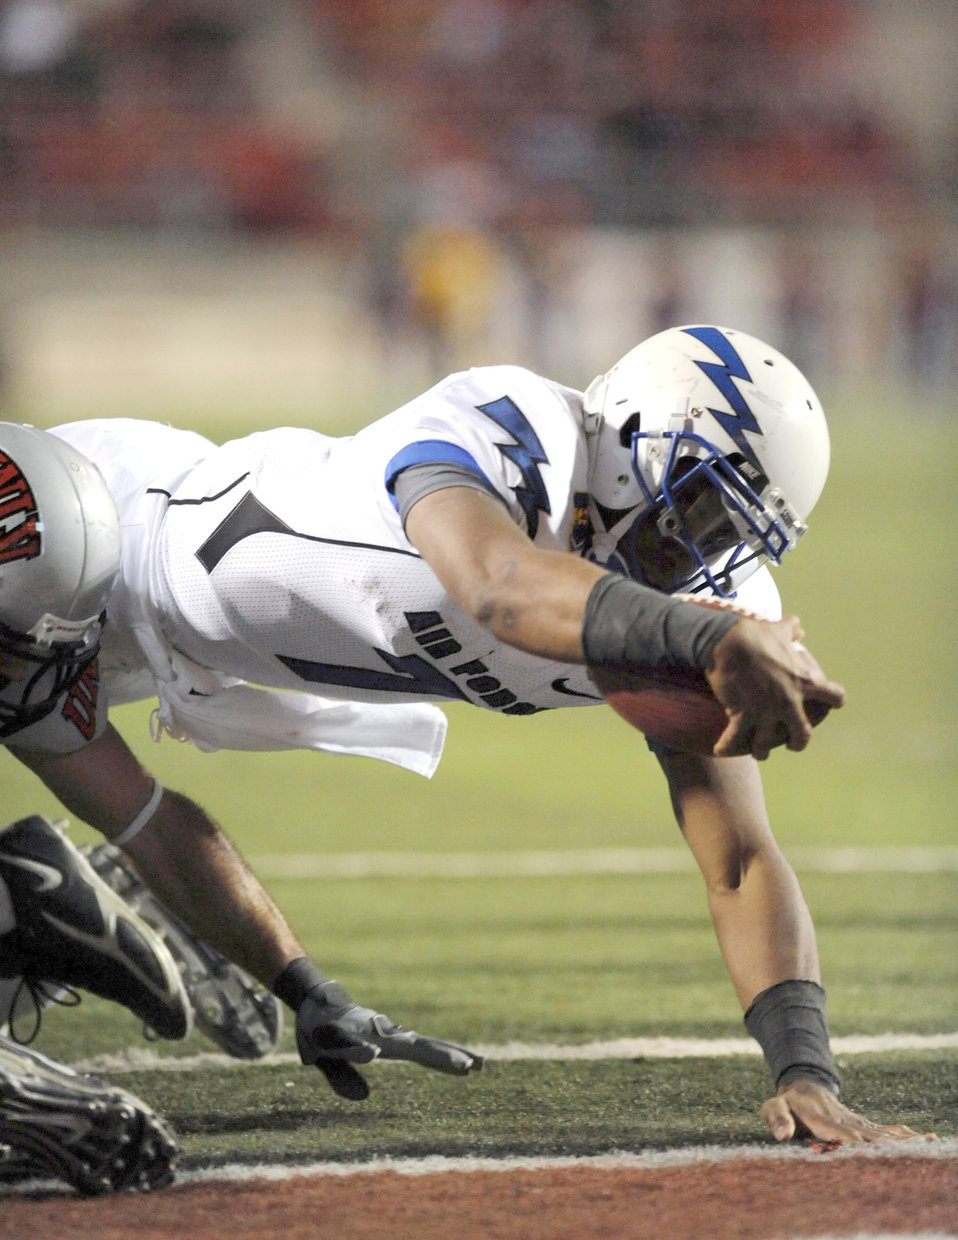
USAFA vs UNLV

Air Force quarterback Tim Jefferson dives into the end zone for a touchdown in the Falcons' final game of the regular season against the University of Nevada, Las Vegas Nov. 18, 2010, in Las Vegas. Jefferson threw for 111 yards and ran for 64, scoring three rushing touchdowns to lead the Falcons to a 35-20 victory over the Rebels.